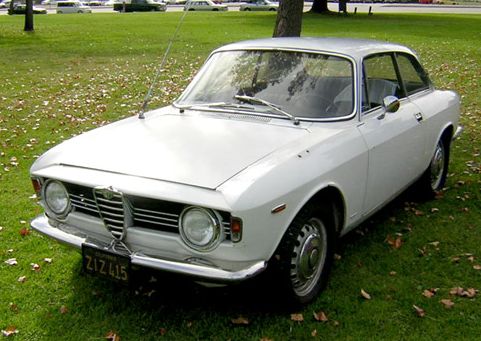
1967 Giulia Sprint GT Veloce Italiano: Alfa Romeo Giulia Sprint GT Veloce 1600 del 1967